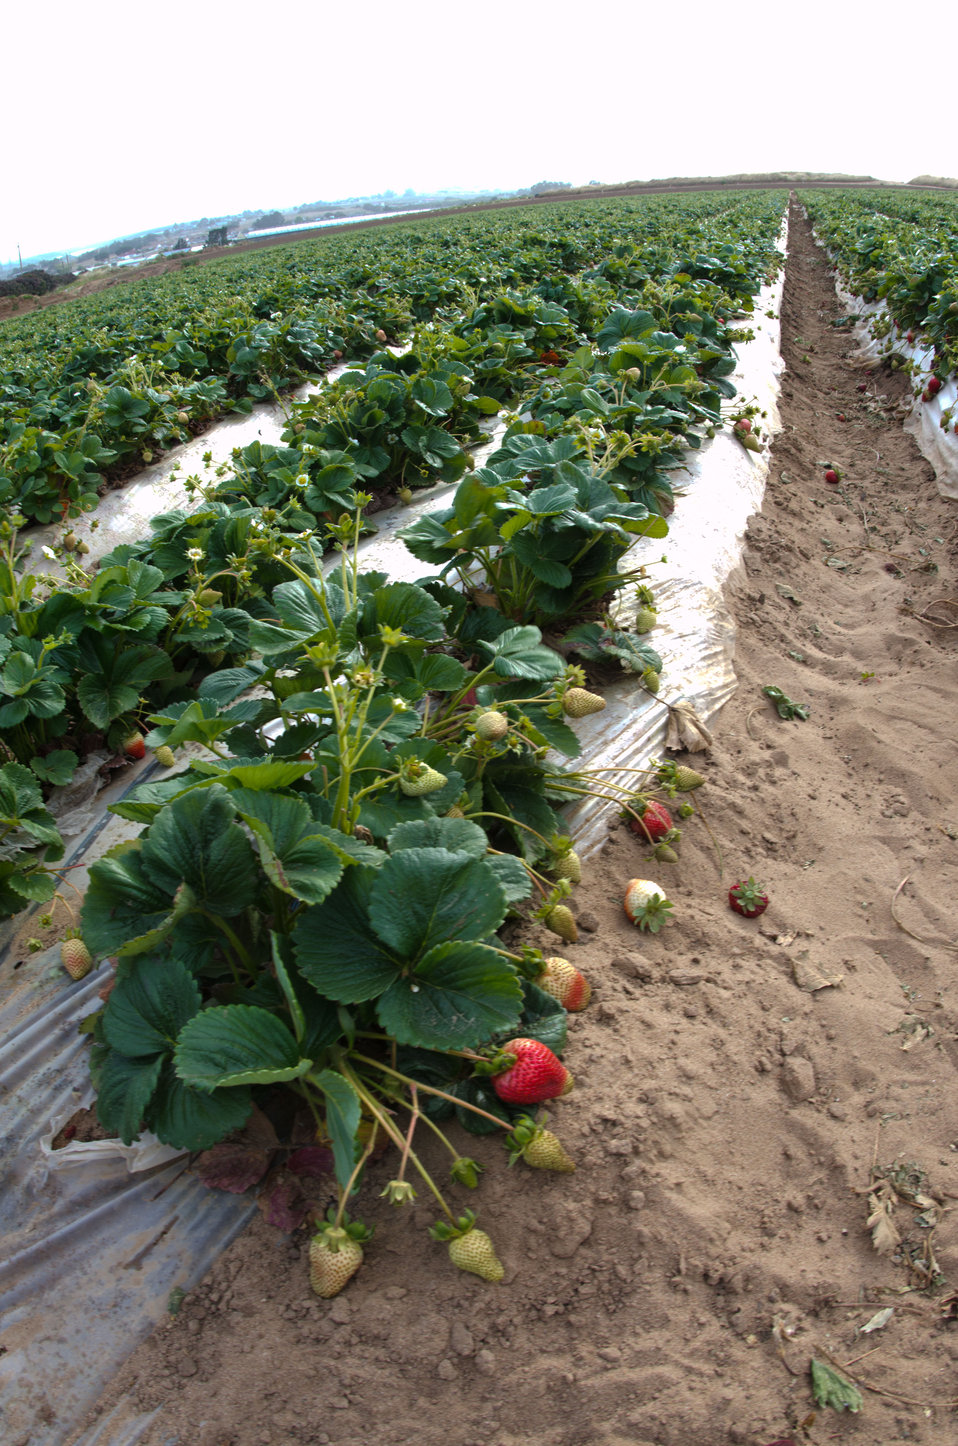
A strawberry farm near Castroville, CA, on Thursday, June 16, 2011.